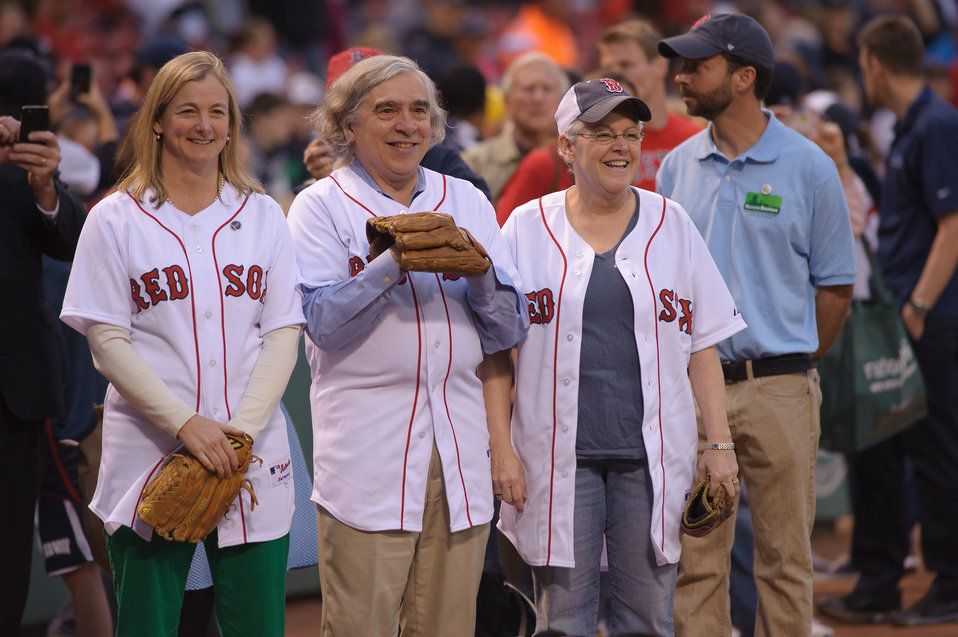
A Day In The Life of the EPA Administrator - April 22, 2014 6:59 pm

'Put me in coach.'